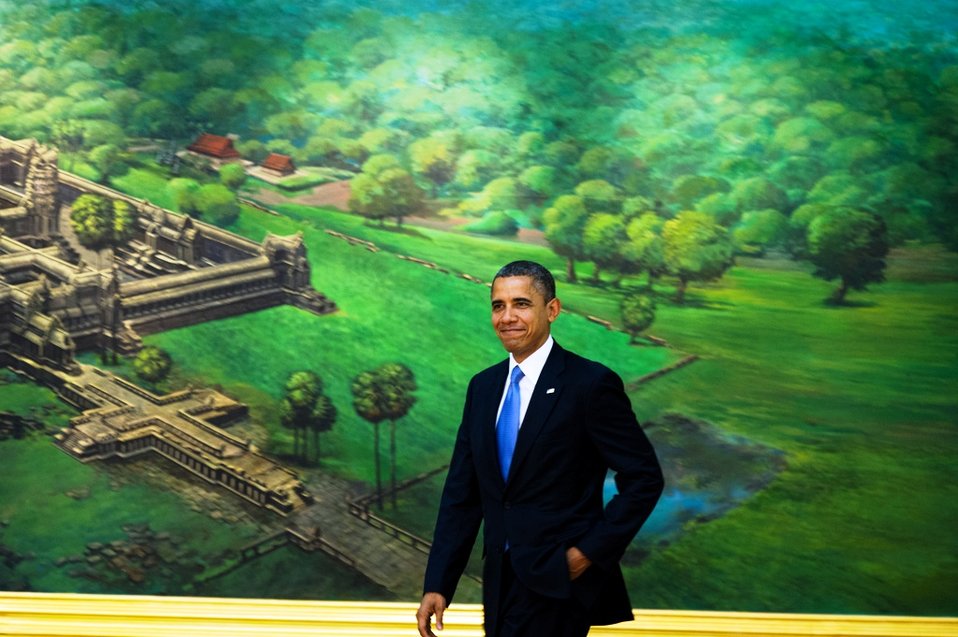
President Obama at the ASEAN-U.S. Leaders' Meeting

U.S. President Obama participates in the ASEAN-United States Leaders' Meeting at the Peace Palace in Phnom Penh, Cambodia, November 19, 2012. President Obama is the first U.S. President to visit Cambodia.